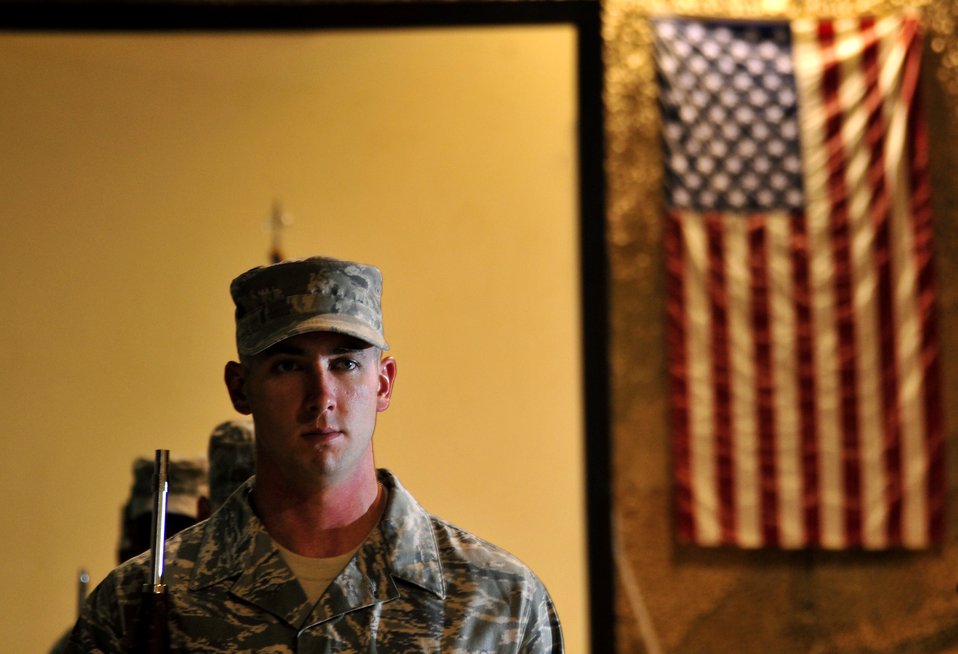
Practice makes perfect

Senior Airman Christopher Fountain practices drill team techniques Aug. 28, 2011, in preparation for a 9/11 ceremony at Ali Base, Iraq. Fountain is a 407th Air Expeditionary Group Honor Guard member.